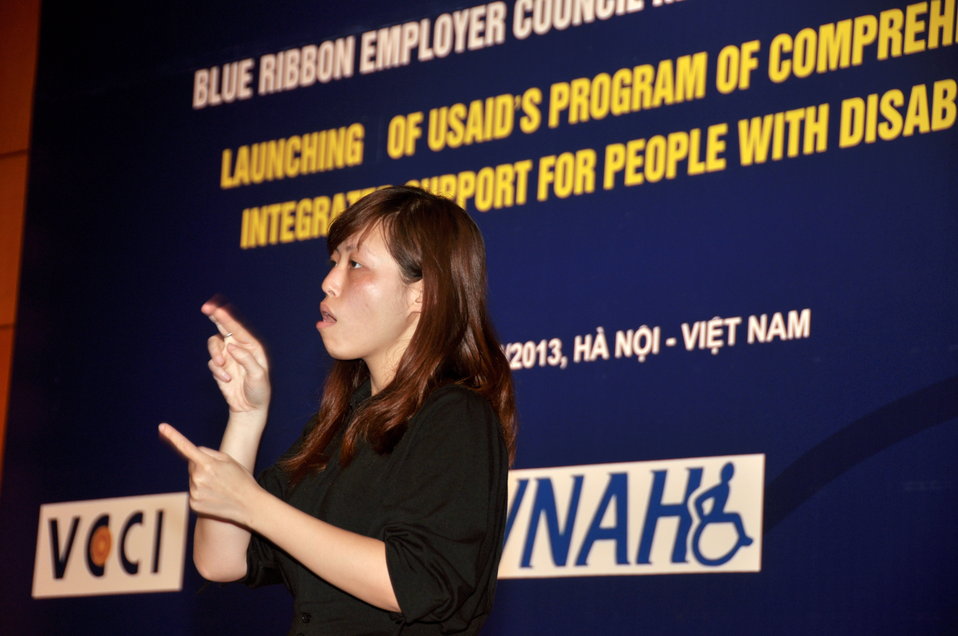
Blue Ribbon Employer Council Awards for Hiring Vietnamese with Disabilities

Hanoi, April 17, 2013